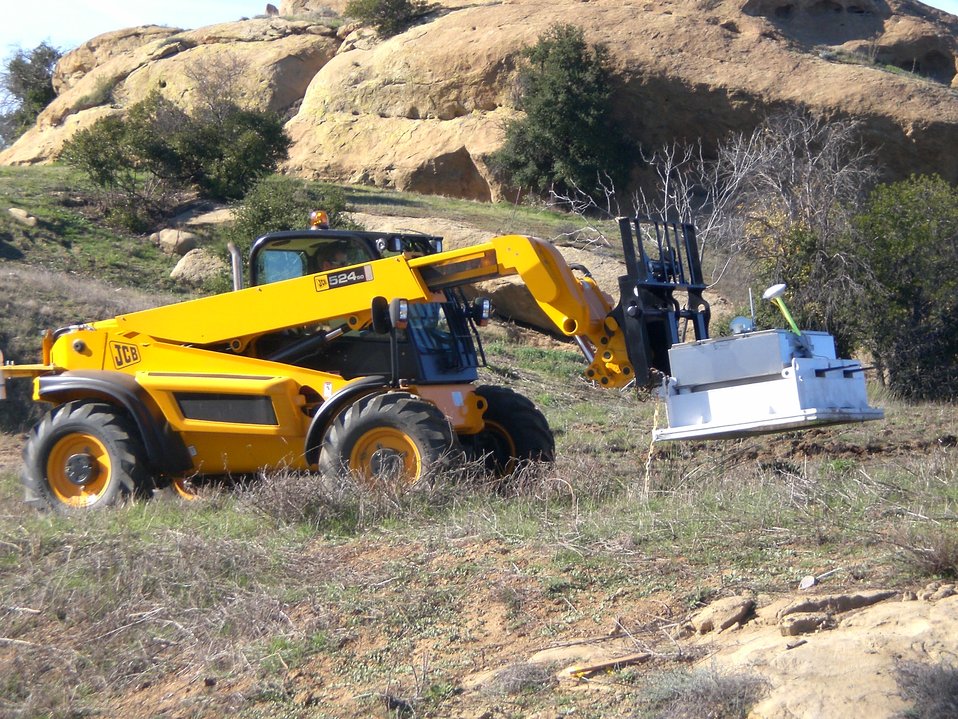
Recovery Act-Funded Study Assesses Contamination at Former Test Site in California

Workers conduct Gamma Scanning for the EPA study.

Under an interagency agreement with DOE, the Environmental Protection Agency (EPA) is conducting
a study at Santa Susana Field Laboratory (SSFL) Area IV and the Northern Undeveloped Land. DOE’s Energy Technology Engineering Center (ETEC) is located in Area IV. Results of the study will guide cleanup decisions for this portion of SSFL, which was once used for a broad range of energy related research and development.